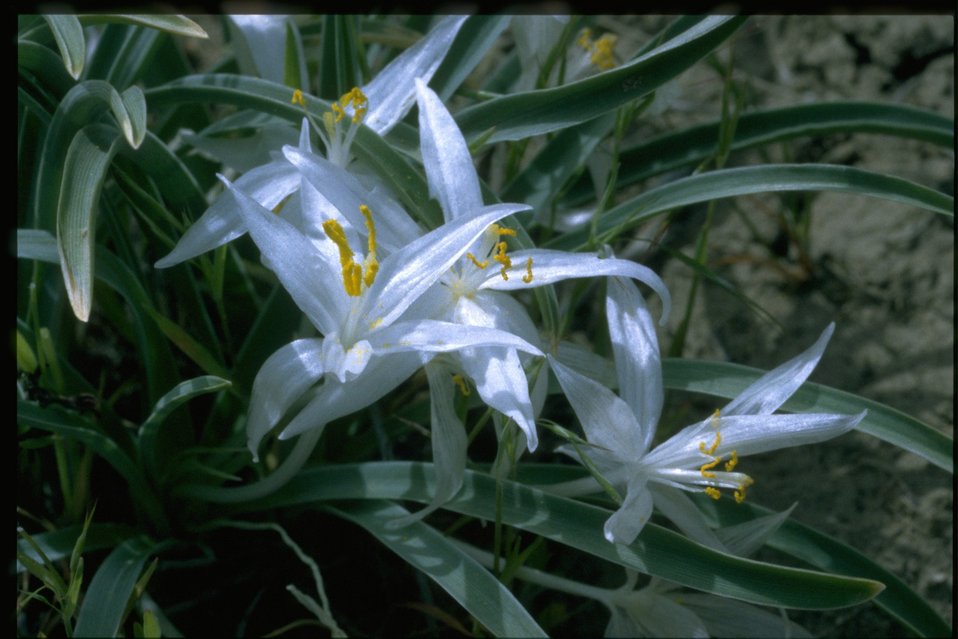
Medium shot of Star Lily; Sand Lily; Mountain Lily (Leucocrinum montanum).